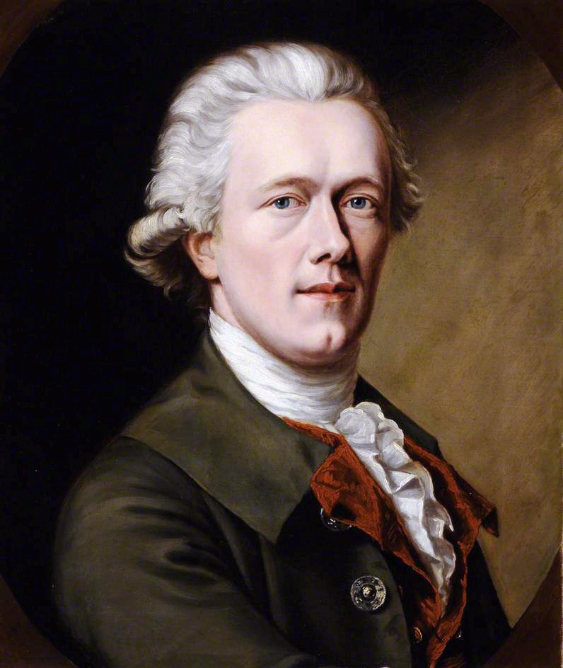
Philippe Jean, by Philippe Jean